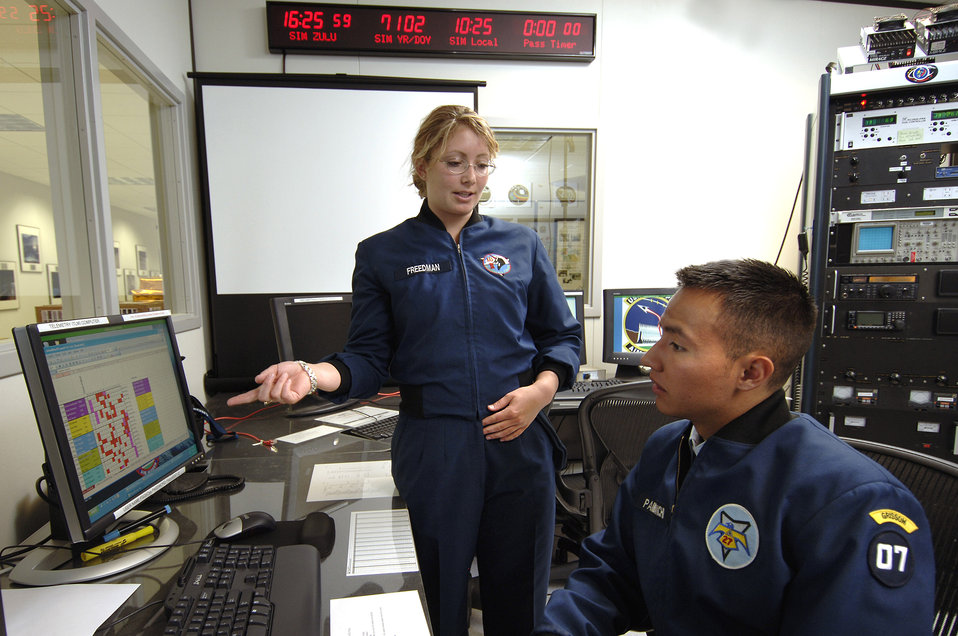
Satellite-savvy cadets accomplish out of world experiments

Cadet senior Charlette Freedman explains to cadet commander senior Johann Pambianchi April 12 when the next Falcon Satellite-3 pass will occur at the U.S. Air Force Academy in Colorado Springs, Colo. Based on orbital mechanics of the satellite which launched in March from Cape Canaveral Air Force Station, Fla., a pass occurs three or four times per day. The satellite was designed and built, by Academy cadets who now test and operate it. The project is administered by the USAFA Space Systems Research Center.